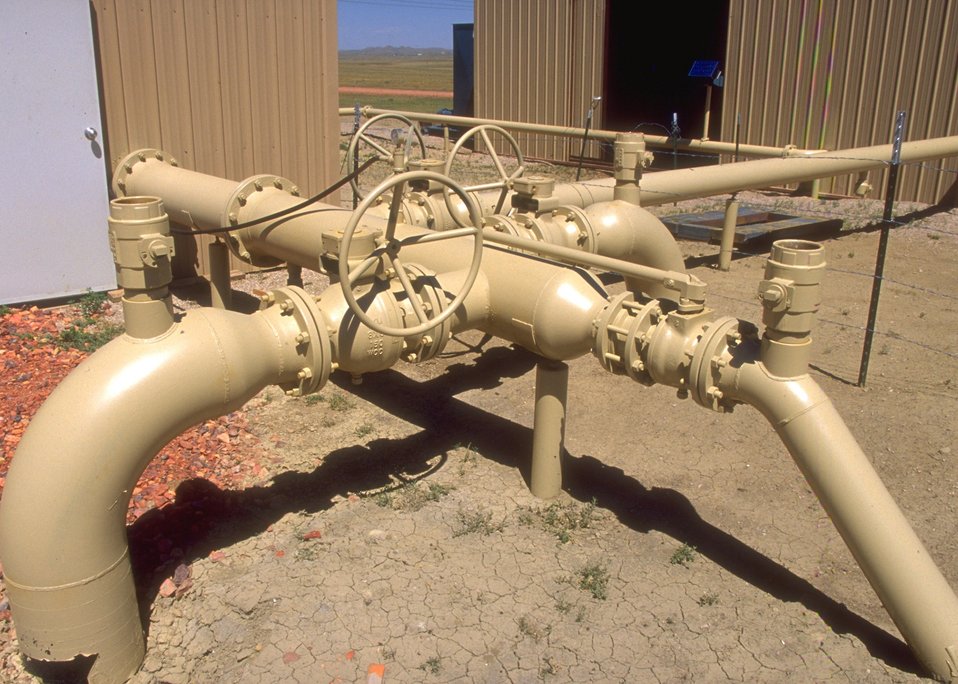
Facilities used in the production of coal bed methane, Buffalo Field Office.